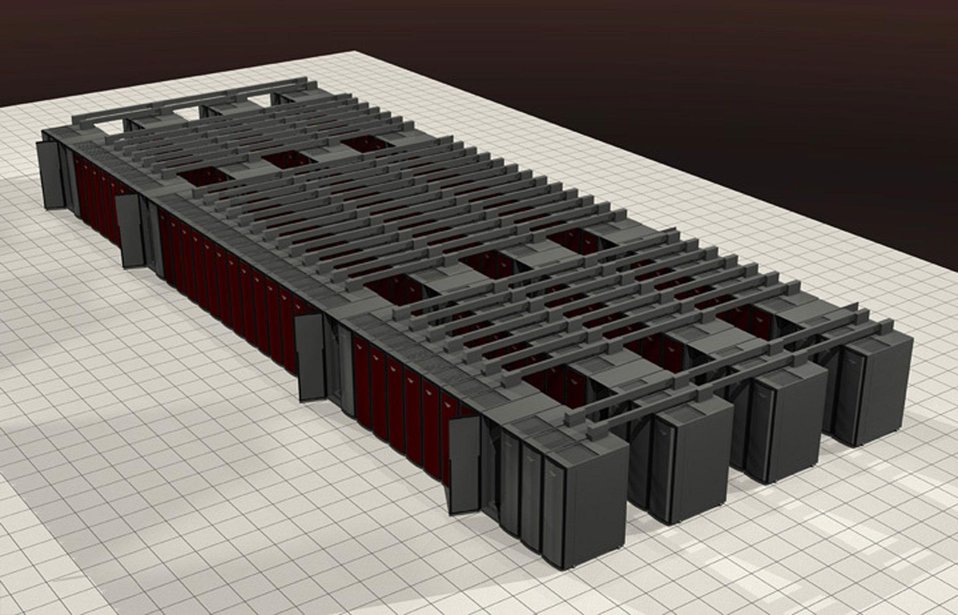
SANDIA NATIONAL LABORATORIES' RED STORM SUPERCOMPUTER PROJECT.

RED STORM, AN AIR-COOLED SUPERCOMPUTER IS BEING DEVELOPED BY SANDIA AND CRAY INC. THE MAIN PURPOSE OF THE MACHINE IS WORK FOR THE U.S. NUCLEAR STOCKPILE: DESIGNING NEW COMPONENTS, VIRTUALLY TESTING COMPONENTS UNDER HOSTILE, ABNORMAL, AND NORMAL CONDITIONS AND HELPING IN WEAPONS ENGINEERING AND WEAPONS PHYSICS. THE SUPERCOMPUTER IS EXPECTED TO BE THE WORLD'S FASTEST, YET SMALLER AND LESS EXPENSIVE THAN ANY COMPETITOR.